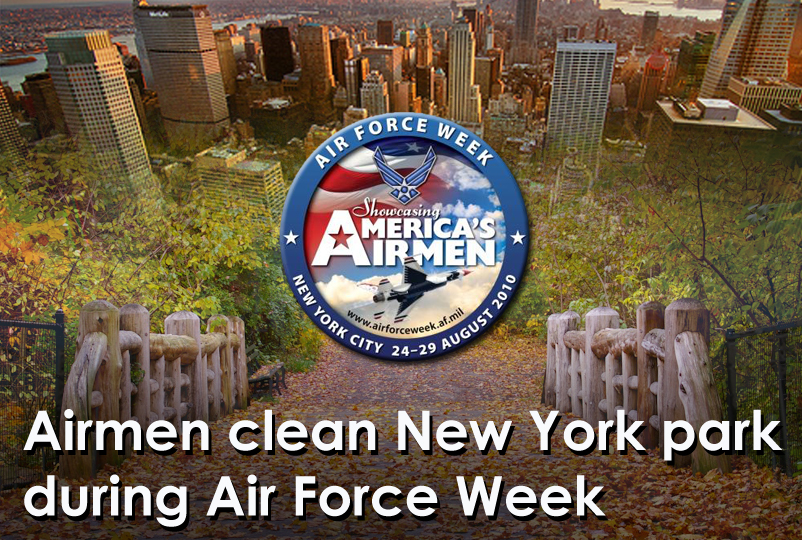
Air Force Week kicks off in New York City